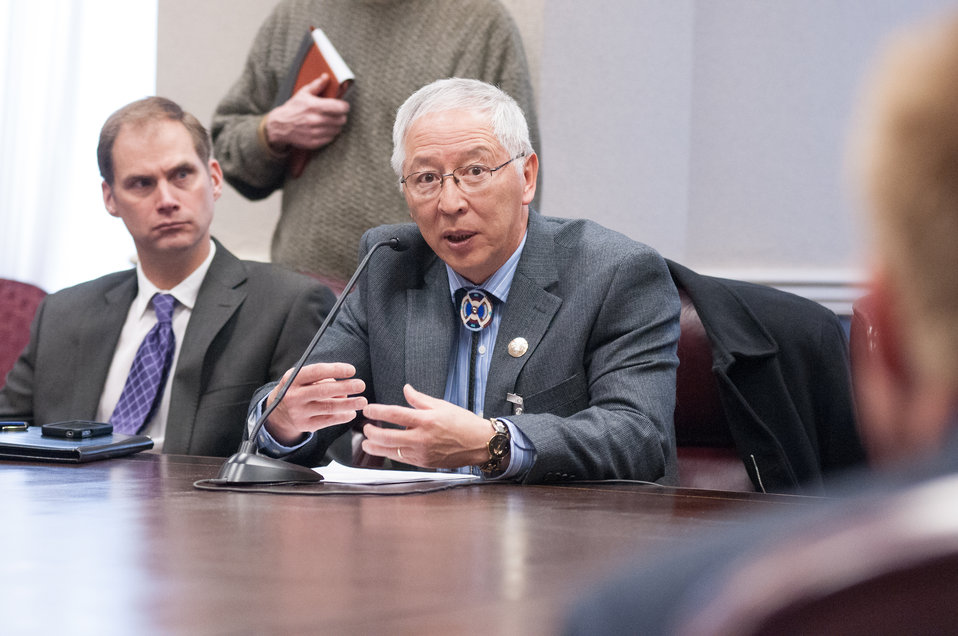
Little Big Horn College, President David Yarlott, Jr., Crow Agency, Montana, presents some of his college's needs to U.S. Department of Agriculture Senior Advisor to the Secretary on Tribal Relations and Office of Tribal Relations Acting Director Max Finberg, during the USDA and American Indian Higher Education Consortium Leadership Group Winter Meeting, at the USDA Whitten Building, Williamsburg Room, in Washington D.C., on Friday, Feb. 8, 2013.